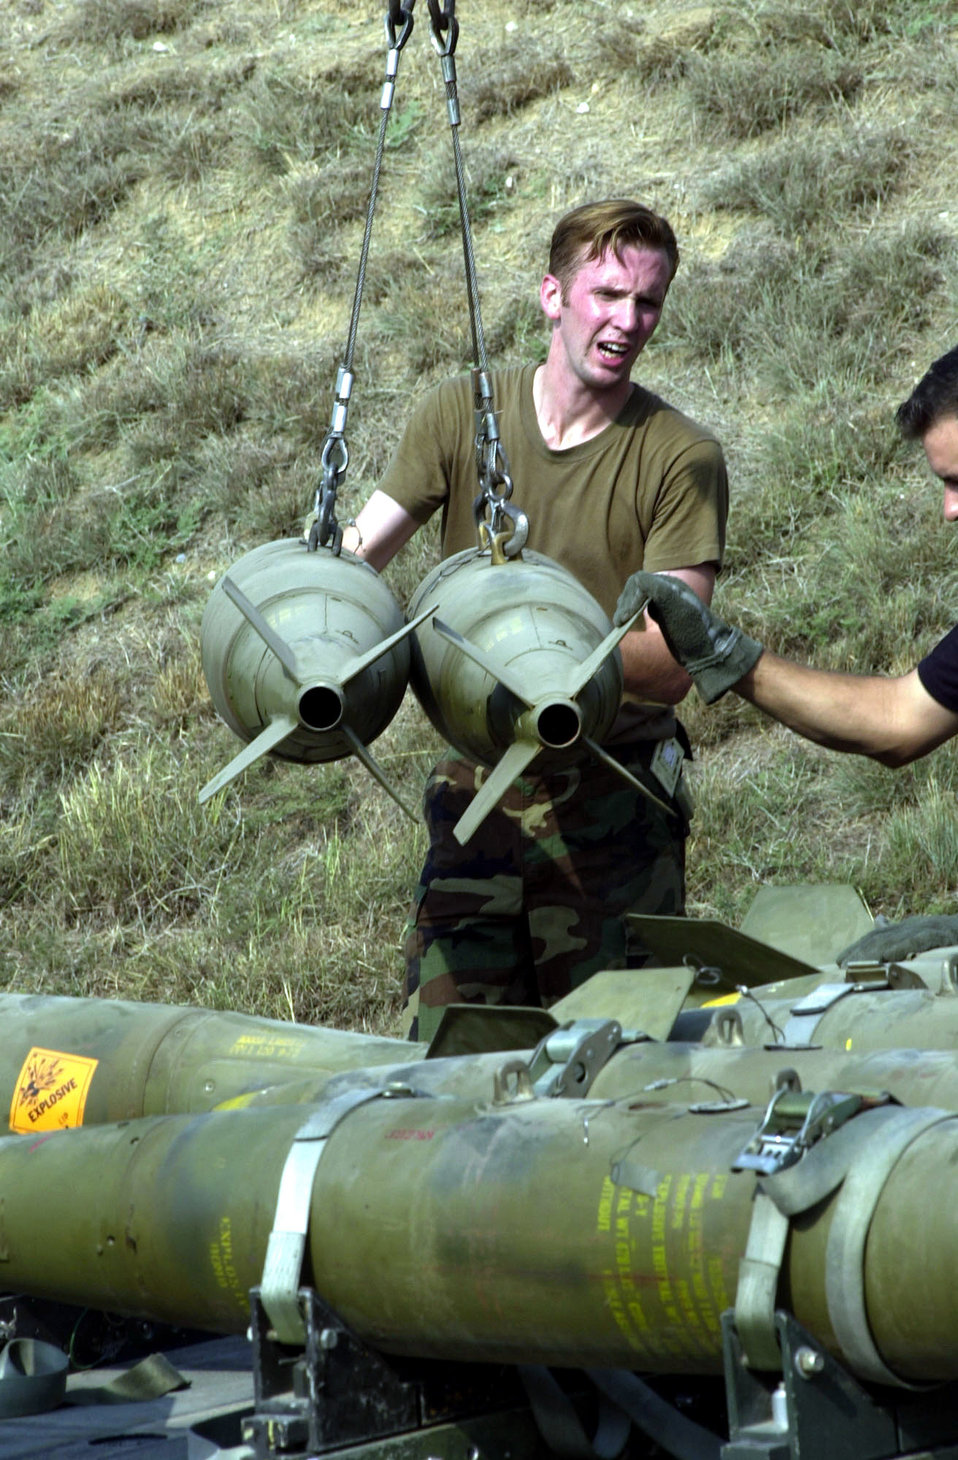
Fuse swap

OPERATION NORTHERN WATCH -- Staff Sgt. Jason Harre, a conventional maintenance crew chief from the 31st Maintenance Squadron at Aviano Air Base, Italy, swaps out expired FMU-139 A/B fuses from Mark-82 bombs in support of Operation Northern Watch. These assets are apart of the aircraft deployment to Incirlik AB, Turkey.